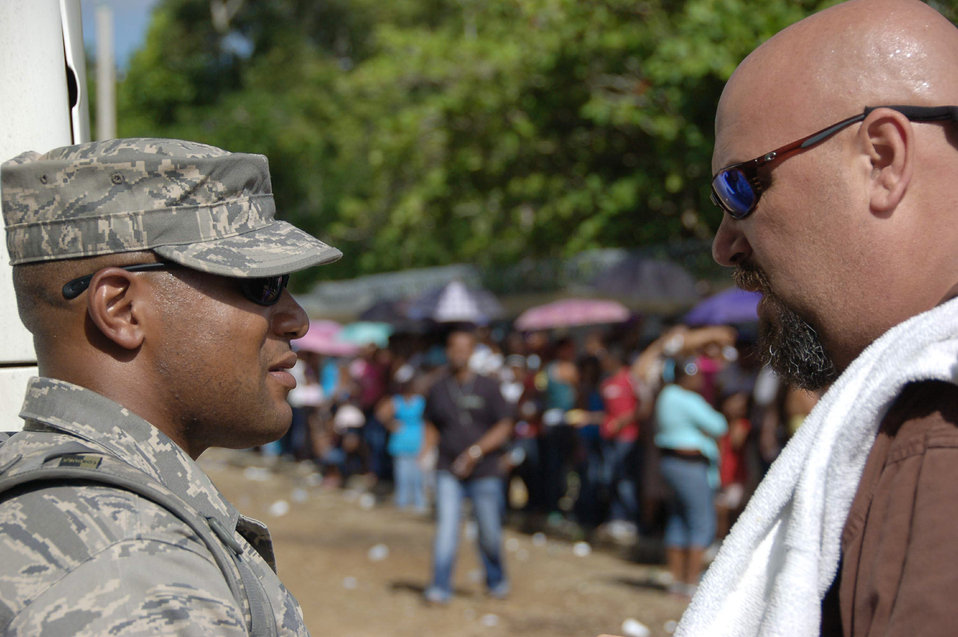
Medics provide care to people in Dominican Republic

Tech. Sgt. Marcus A. Jackson (left) and John Henry discuss security April 20 as patients line up in the background at a primary school in Hostos, Dom. Rep., during the medical readiness exercise, Beyond the Horizon 2009 - Caribbean. Mr. Henry is the mission planner of the largest Maxwell Air Force Base-planned MEDRETE to date and Sergeant Jackson is the day shift flight chief with the 42nd Security Forces Squadron at Maxwell AFB.